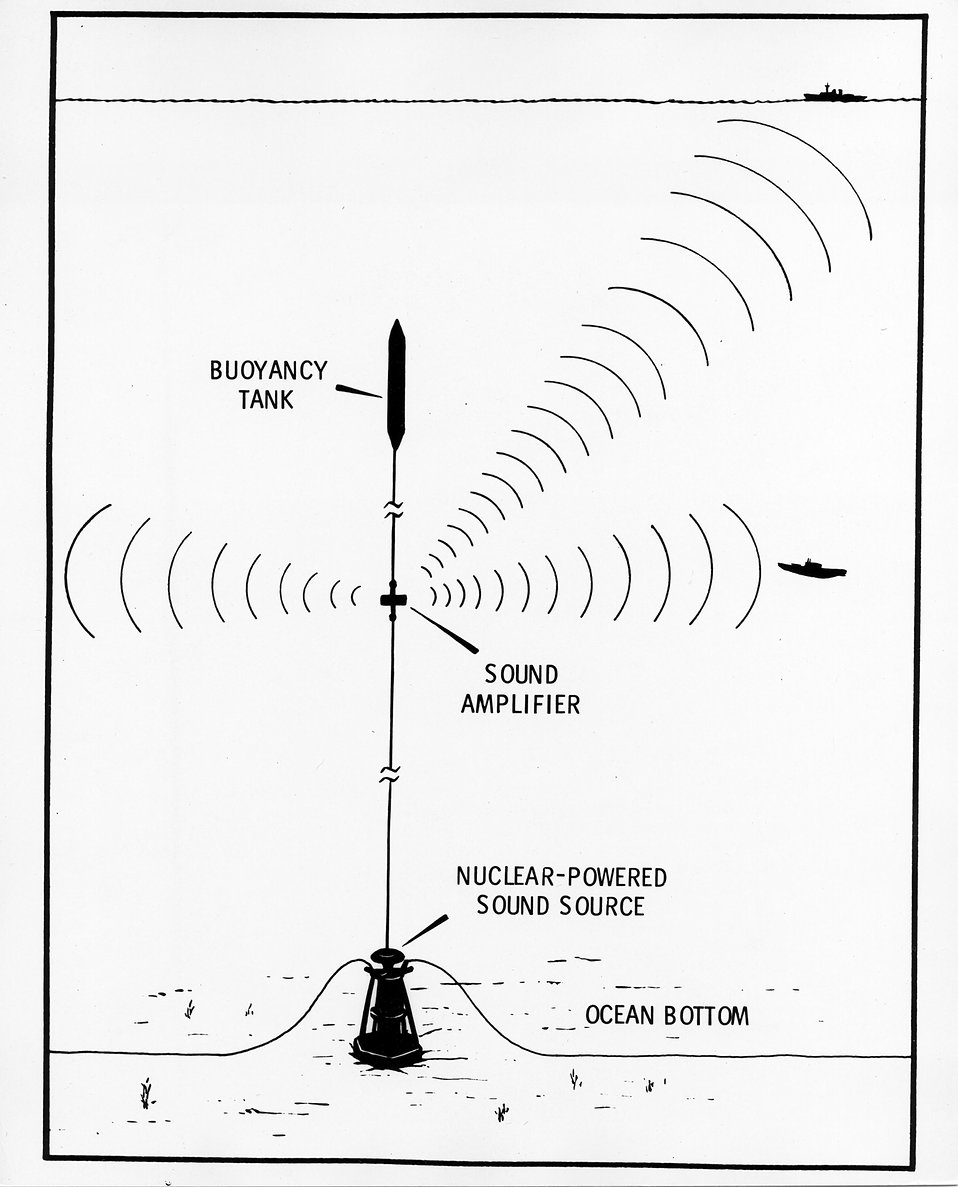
Artist's concept shows implantation of the Navy navigational aid put to use today 750 miles off the coast of Jacksonville, FL.